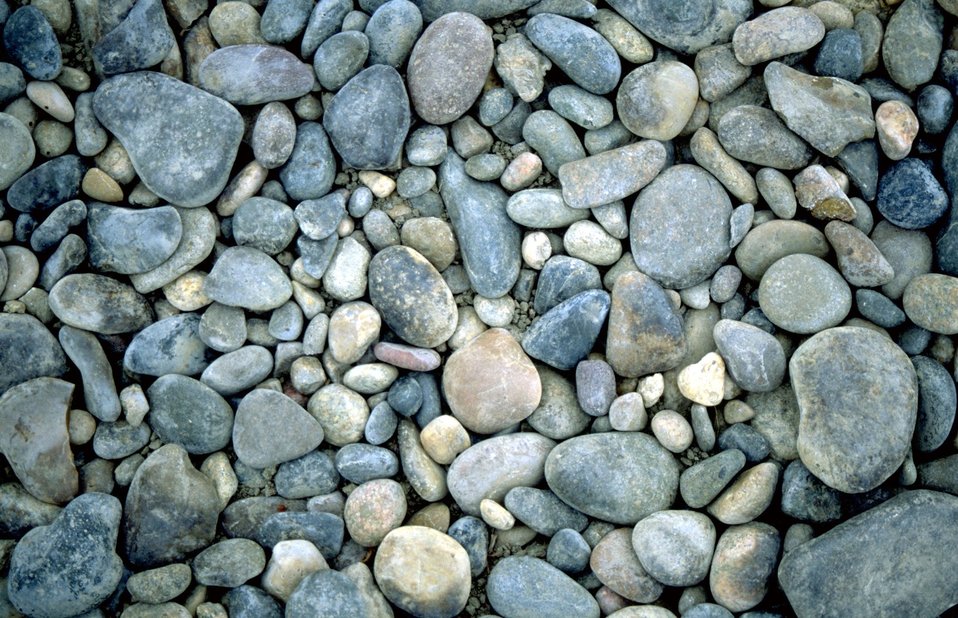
Yellowstone River rock at Howrey Island Recreation Area